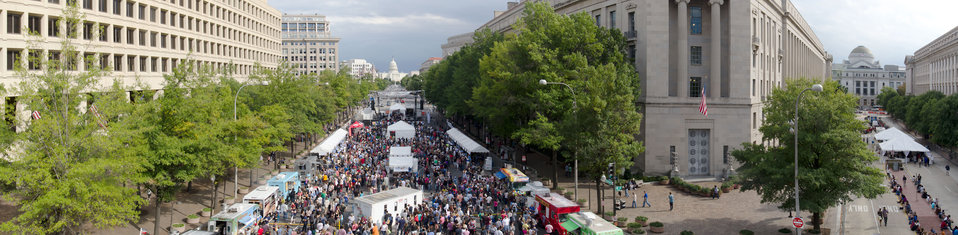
(Virtual panorama) The Taste of D.C., event highlights more than 70 eateries, 30 specialty beer providers, the United Service Organization (USO) Metropolitan Washington, and live bands. It is anticipated that more than 500,000 people will attend over the course of the three-day event, which extends from the White House to the Capitol, along Pennsylvania Ave. in Washington D.C. on Saturday, October 6, 2012. Agriculture Food Safety and Inspection Service specialists present talks and cooking demonstrations. Agriculture’s mobile Discovery Zone is on hand to educate children and parents about the four main principals of food safety – clean, separate, cook and chill.